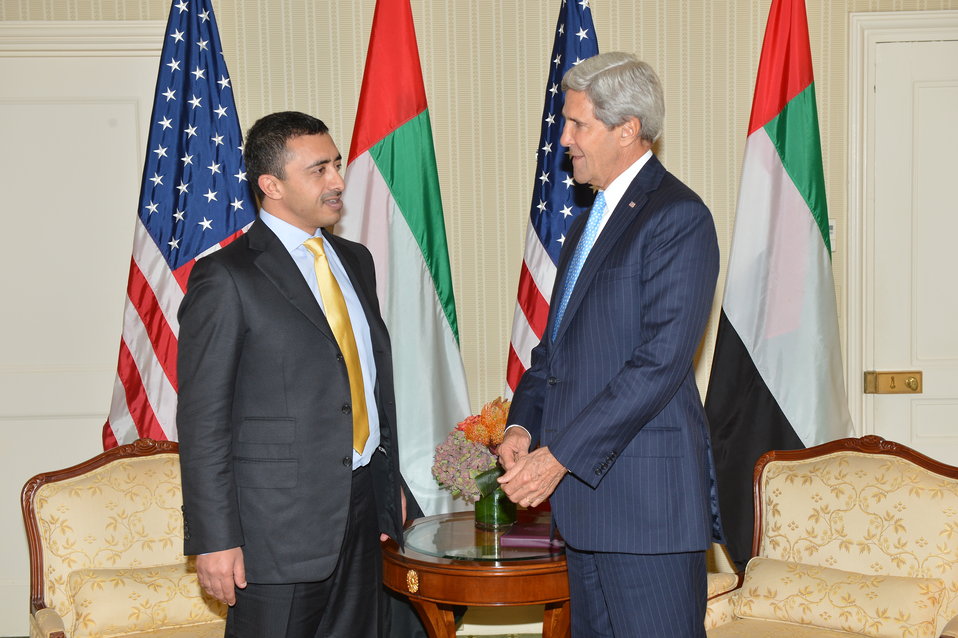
Secretary Kerry Meets With UAE Foreign Minster bin Zayed

U.S. Secretary of State John Kerry meets with UAE Foreign Minister Abdullah bin Zayed in New York City on September 22, 2013.